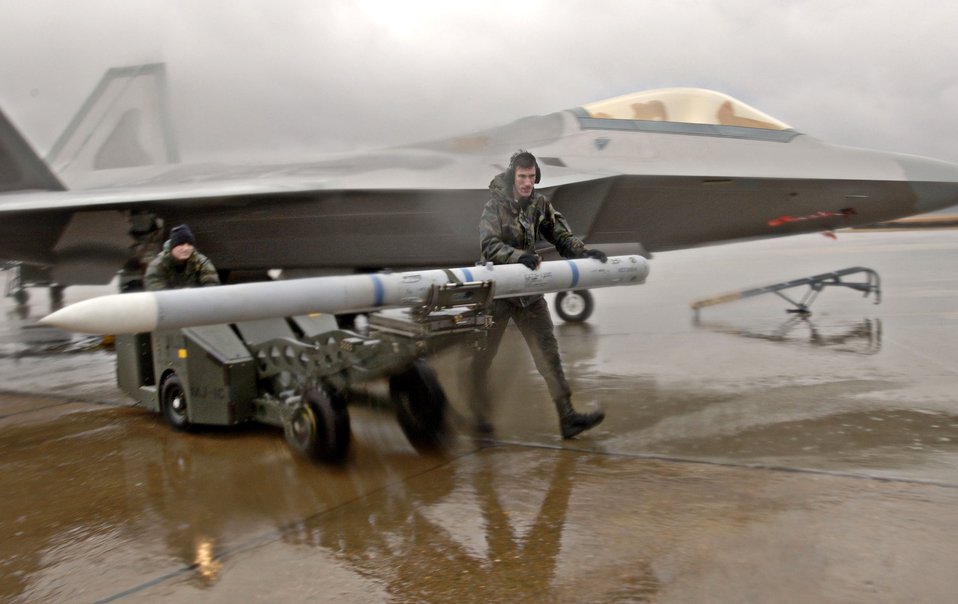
Nothing can stop us

LANGLEY AIR FORCE BASE, Va. -- Senior Airman Michael Breed and Staff Sgt. Scott Robert walk through rain and strong winds with an AIM-120 missile. The missile was removed from an F-22A Raptor during the pre-generation portion of the Phase 1 operational readiness exercise here Jan. 31.